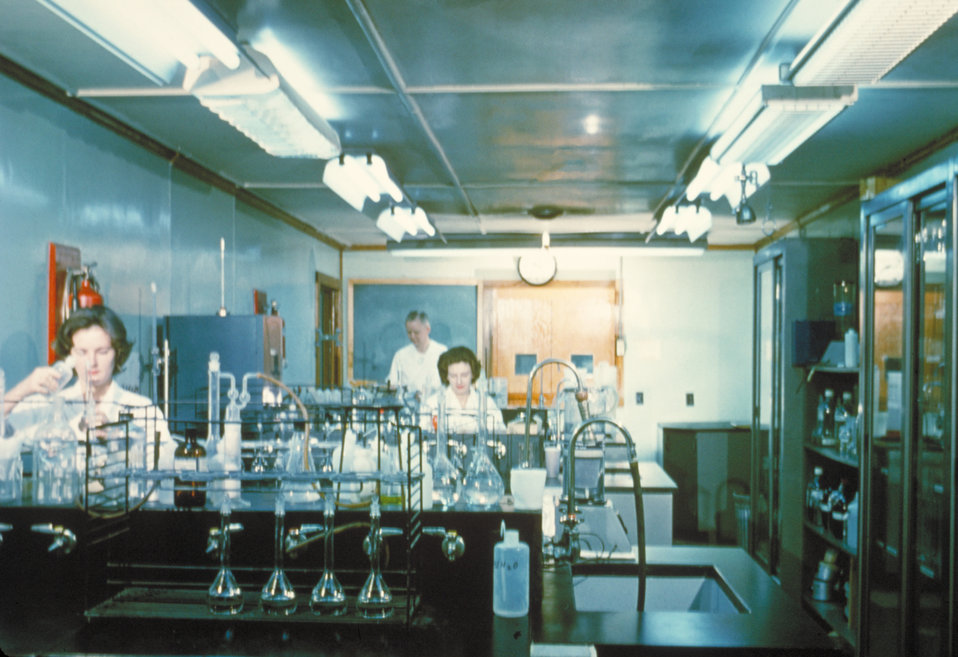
This image shot in the 1960s shows a number of CDC lab technicians while conducting laboratory research.